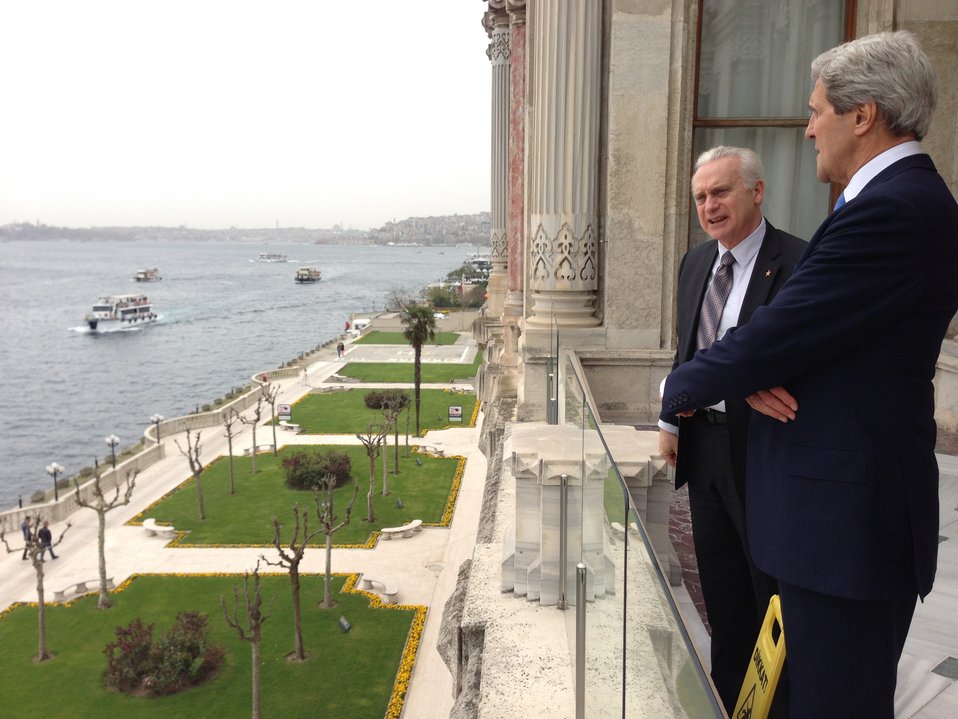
Secretary Kerry Speaks With Ambassador Ricciardone in Istanbul, Turkey

U.S. Secretary of State John Kerry speaks with U.S. Ambassador to Turkey Francis J. Ricciardone, Jr. in Istanbul, April 7, 2013.